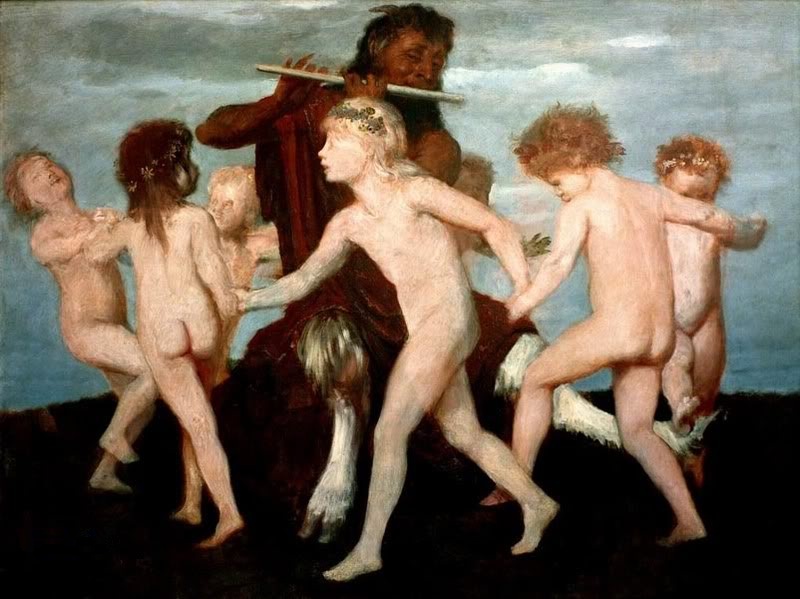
Arnold Böcklin - Pan im Kinderreigen